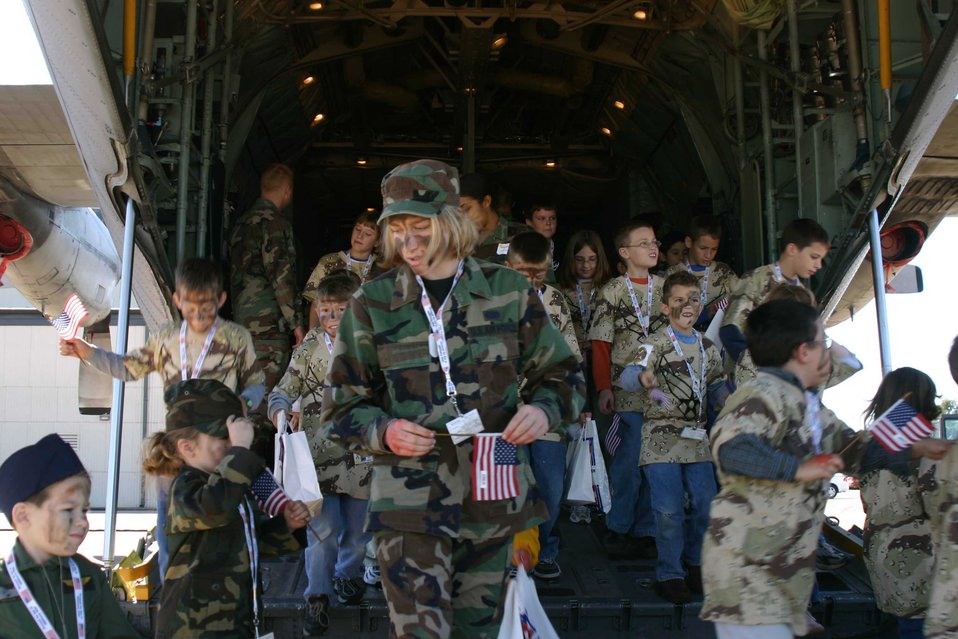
Children process through mobility line, experience military deployment

SHEPPARD AIR FORCE BASE, Texas -- Children climb off a C-130 Hercules after returning from a